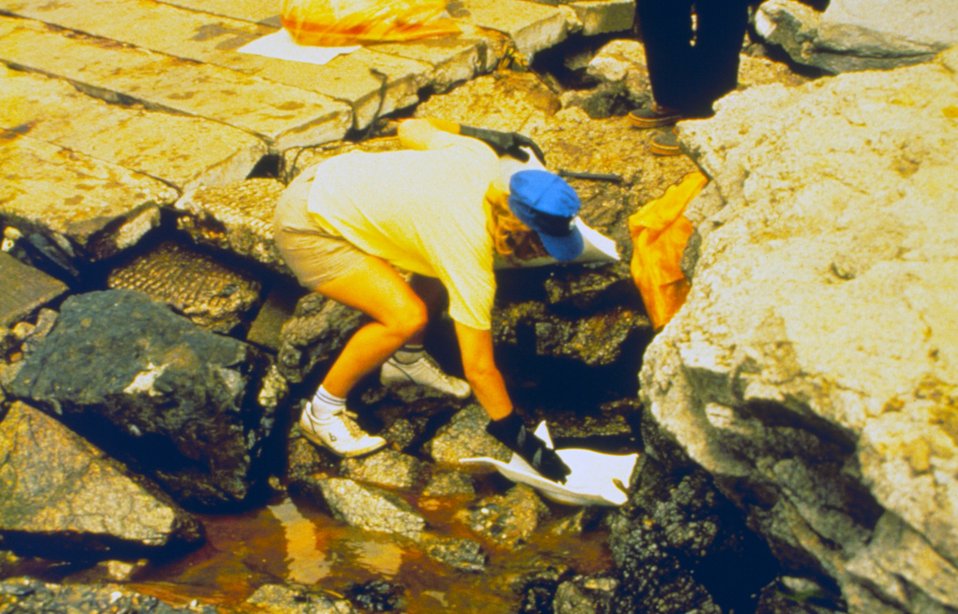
Spill response and clean-up at the oil spill site. Clean up workers use absorbent material to clean-up and wipe down the shoreline. The workers are cleaning up after the World Prodigy tanker spilled 290,000 gallons of #2 home heating oil into Narragansett Bay.